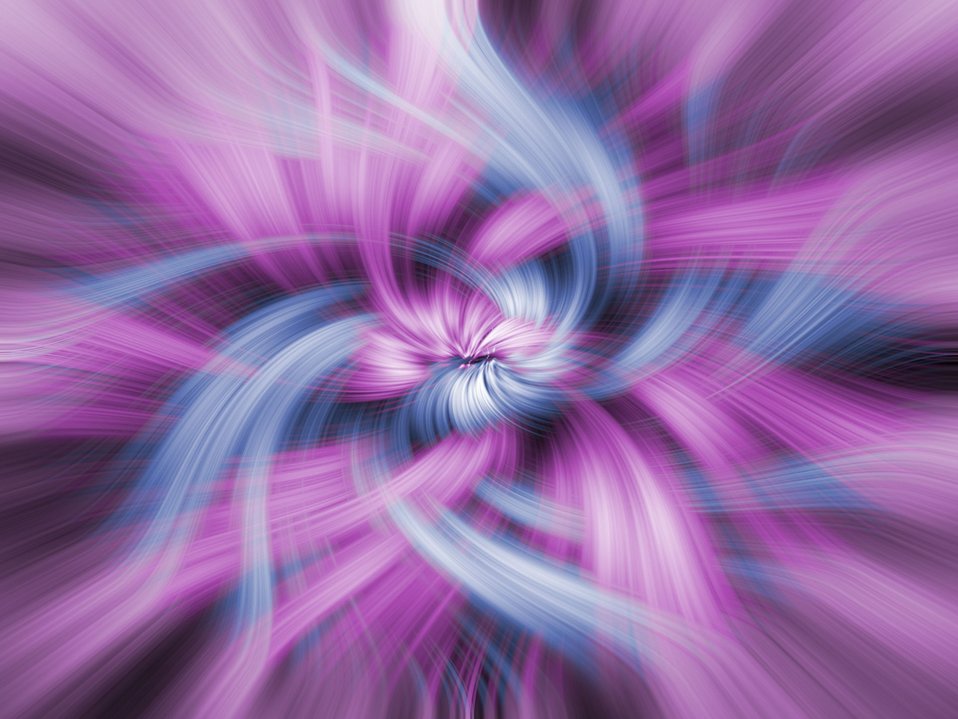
Swirls 1

Pretty swirling colors.